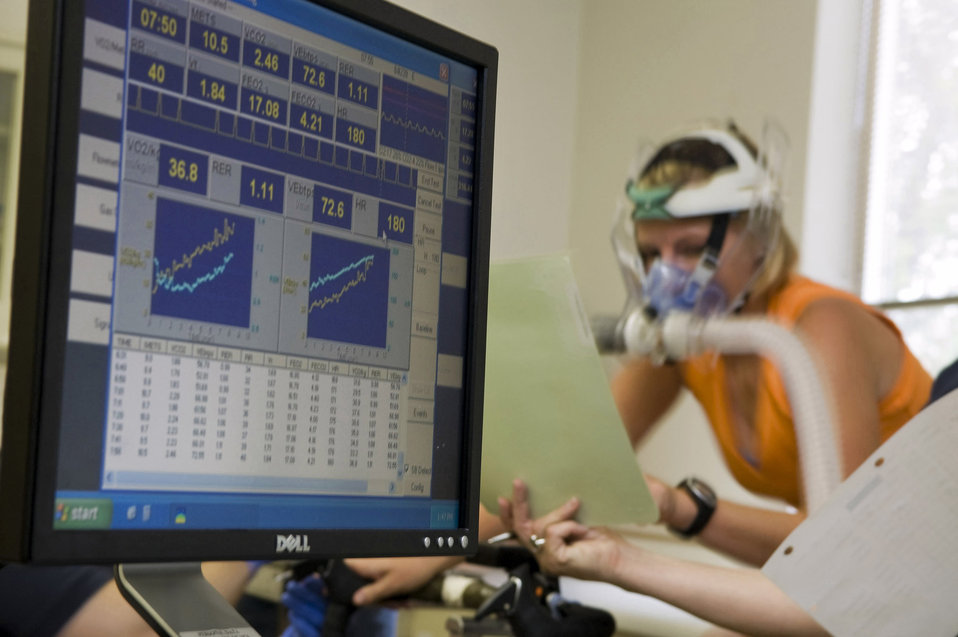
Studying human performance

VO2 max, respiratory exchange rate, heart rate, total ventilation and gross atmosphere are monitored during a citrulline malate supplement study conducted by Air Force Research Laboratory officials Aug. 19 at Brooks City-Base, Texas. Citrulline malate has shown to increase lactate threshold and VO2 max in healthy humans and is being investigated, along with other nutritional supplements and training aids, by AFRL officials to improve cognitive and physical performance of battlefield Airmen.